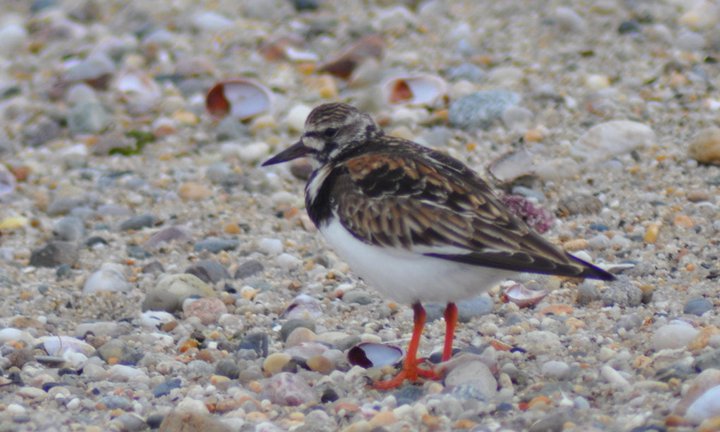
Ruddy Turnstone

A ruddy turnstone at the Nantucket National Wildlife Refuge, MA.